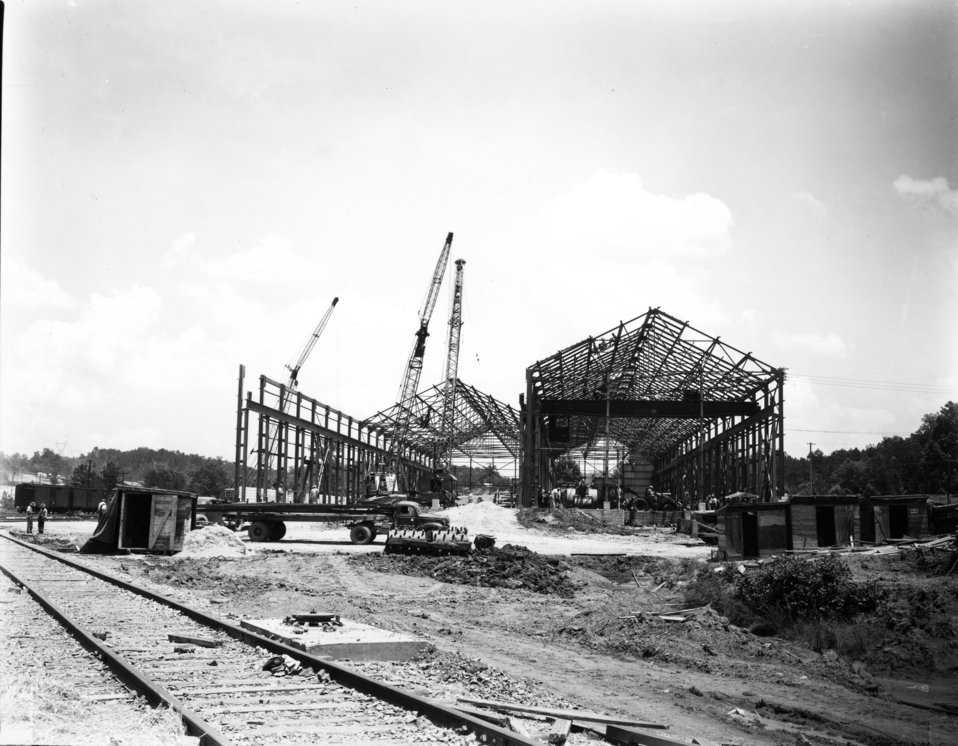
K-25 at Oak Ridge